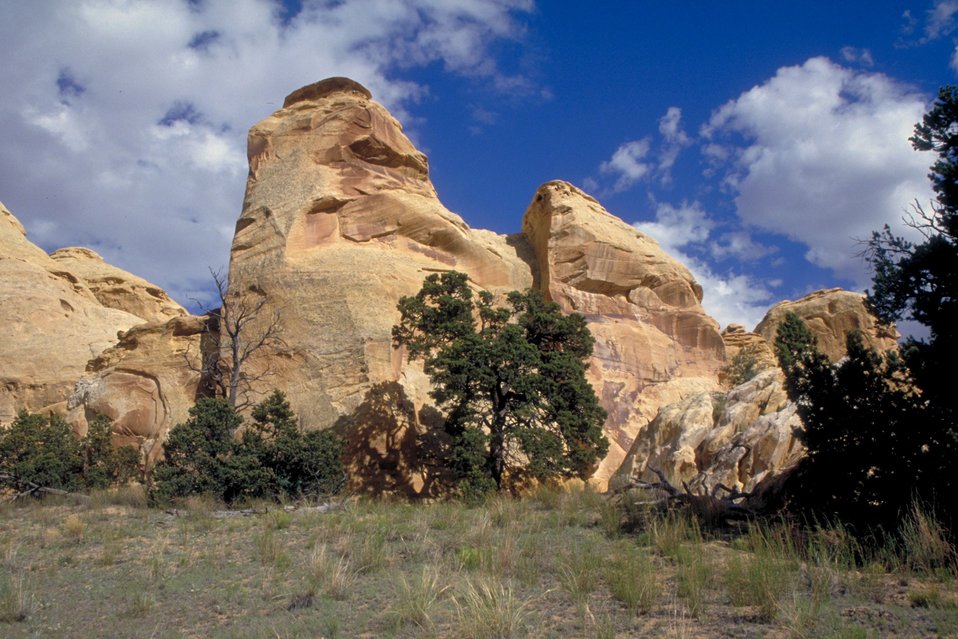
Head of Sinbad, San Rafael Swell